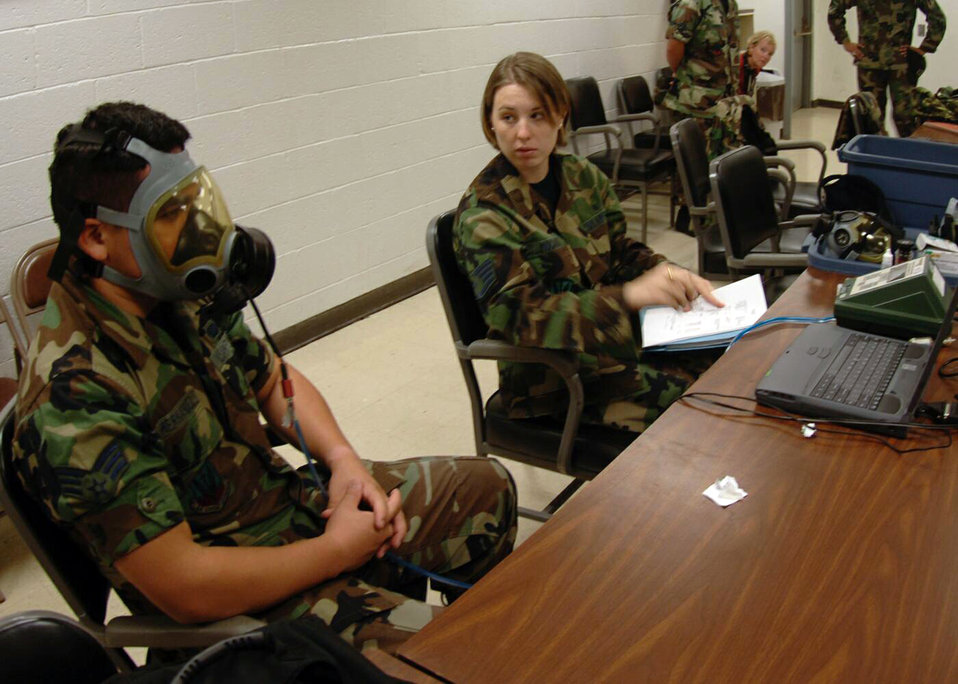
Lining up, moving out

DAVIS-MONTHAN AIR FORCE BASE, Ariz. -- Staff Sgt. Amanda Mocanu assists Senior Airman Andrew Hernandez with his gas mask fit test as part of his predeployment processing. About 1,500 Airmen here are deploying worldwide to support the war on terrorism. Sergeant Mocanu is assigned to the 355th Aerospace Medicine Squadron, and Airman Hernandez is assigned to the 355th Component Maintenance Squadron.